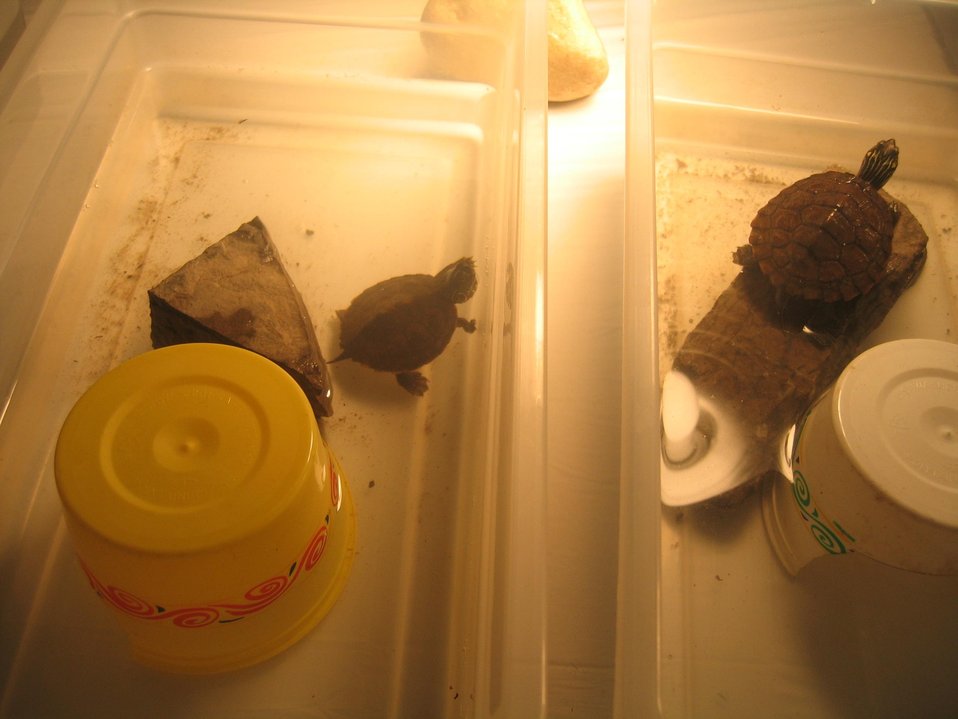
Turtle rehabilitation